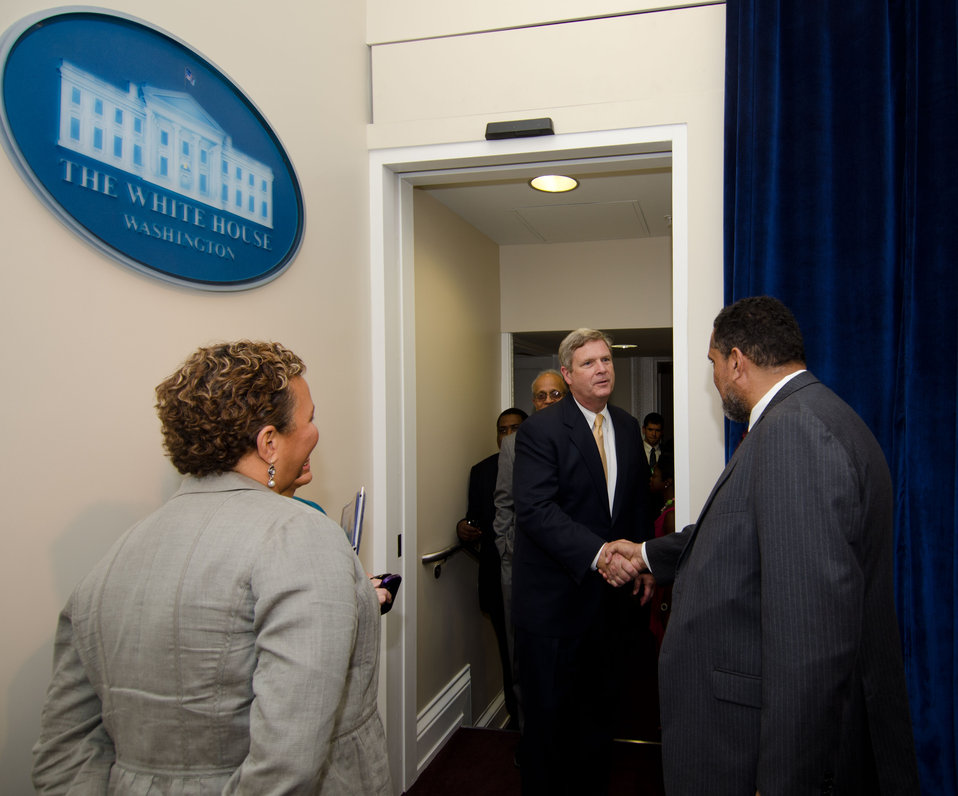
Tuskegee University President and Council of 1890 Universities Chair Gilbert Rochon welcomes Agriculture Secretary Tom Vilsack to the 2012 Historically Black Colleges and Universities 1890 Land-Grant University Memorandum of Understanding Signing Ceremony on Friday, June 29, 2012, in the White House’s Eisenhower Executive Office Building, Washington, DC. It has been150 years since the first Morrill Act of 1862, which was signed by President Abraham Lincoln. The action established land-grant universities in every state and territory. The second Morrill Act of 1890 provided funding to designate separate institutions of higher learning for blacks in those states that did not open the doors of their universities to black students.